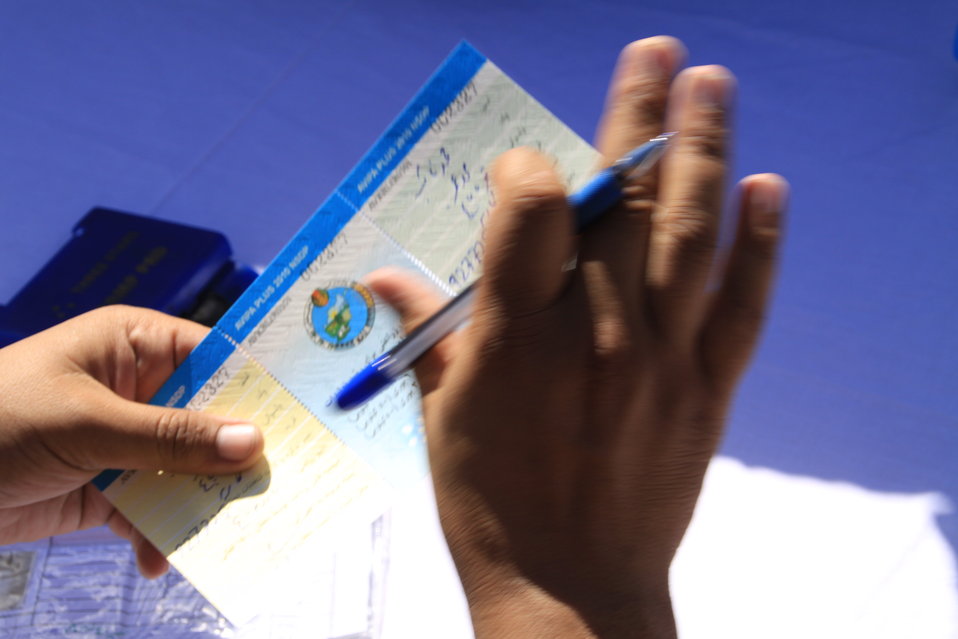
AVIPA Plus Wheat Seed Distribution 101005

US Ambassador Karl Eikenberry and USAID Acting Mission Director Kevin Brownawell joined the Minister of Agriculture, Irrigation and Livestock, H.E. Minister Mohammed Rahimi in signing a Memorandum of Understanding and distributing vouchers to area farmers for wheat and fertilizer.

US Ambassador Karl Eikenberry and USAID Acting Mission Director Kevin Brownawell joined the Minister of Agriculture, Irrigation and Livestock, H.E. Minister Mohammed Rahimi in signing a Memorandum of Understanding and distributing vouchers to area farmers for wheat and fertilizer.

US Ambassador Karl Eikenberry and USAID Acting Mission Director Kevin Brownawell joined the Minister of Agriculture, Irrigation and Livestock, H.E. Minister Mohammed Rahimi in signing a Memorandum of Understanding and distributing vouchers to area farmers for wheat and fertilizer.